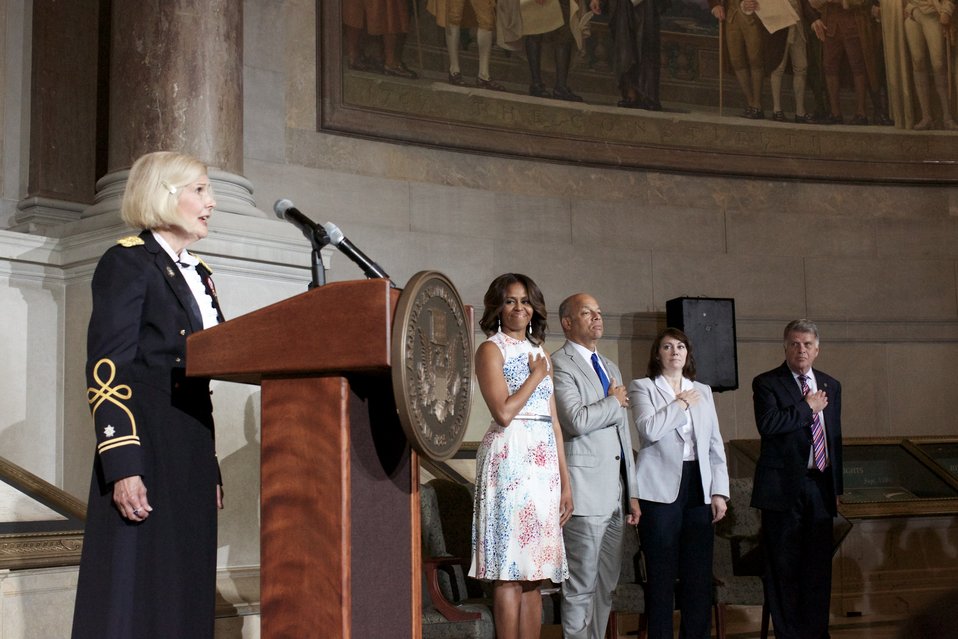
Naturalization Ceremony with Michelle Obama